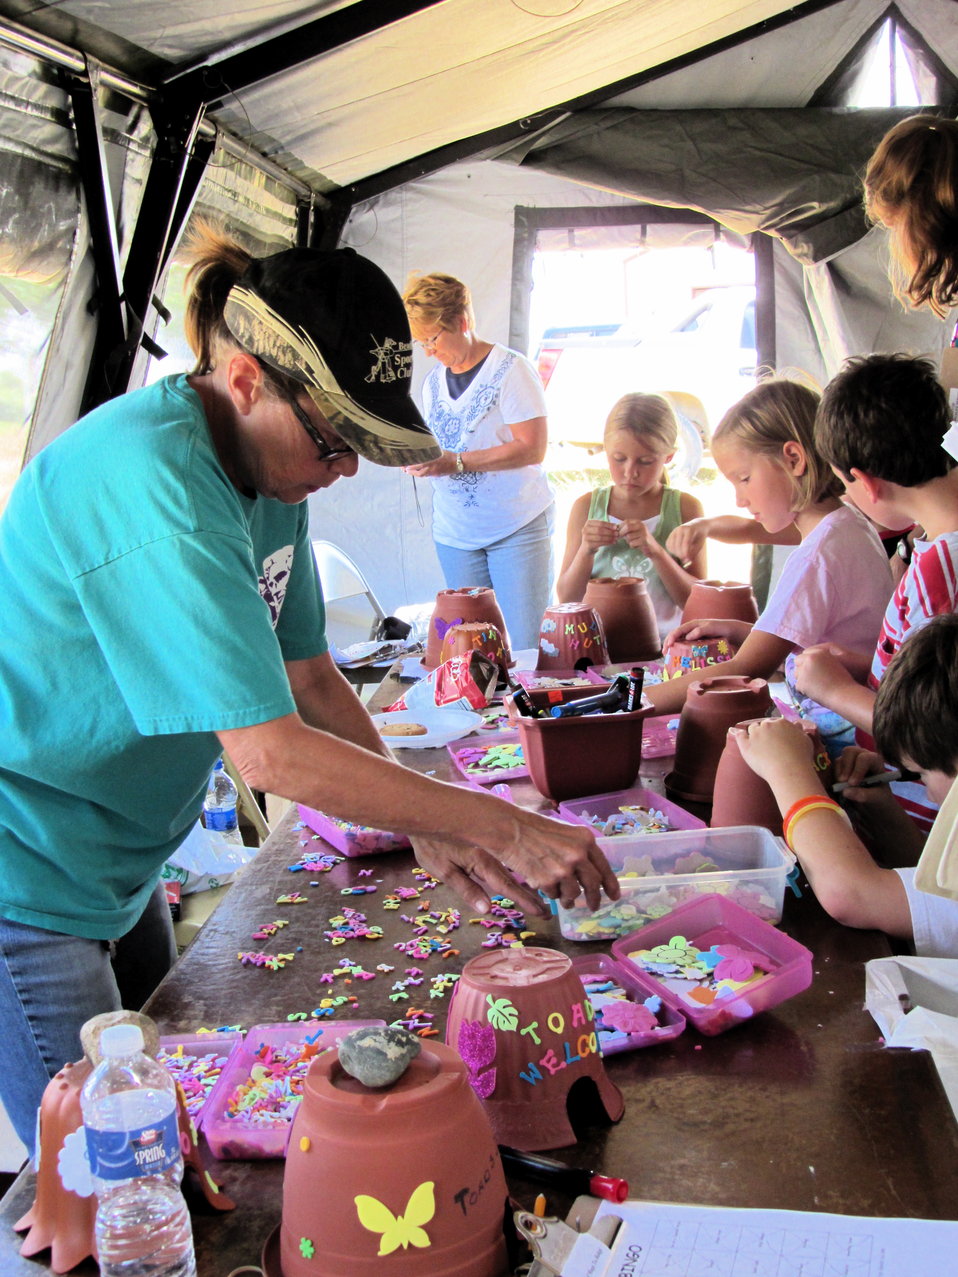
2011 Huron Prairie Fest